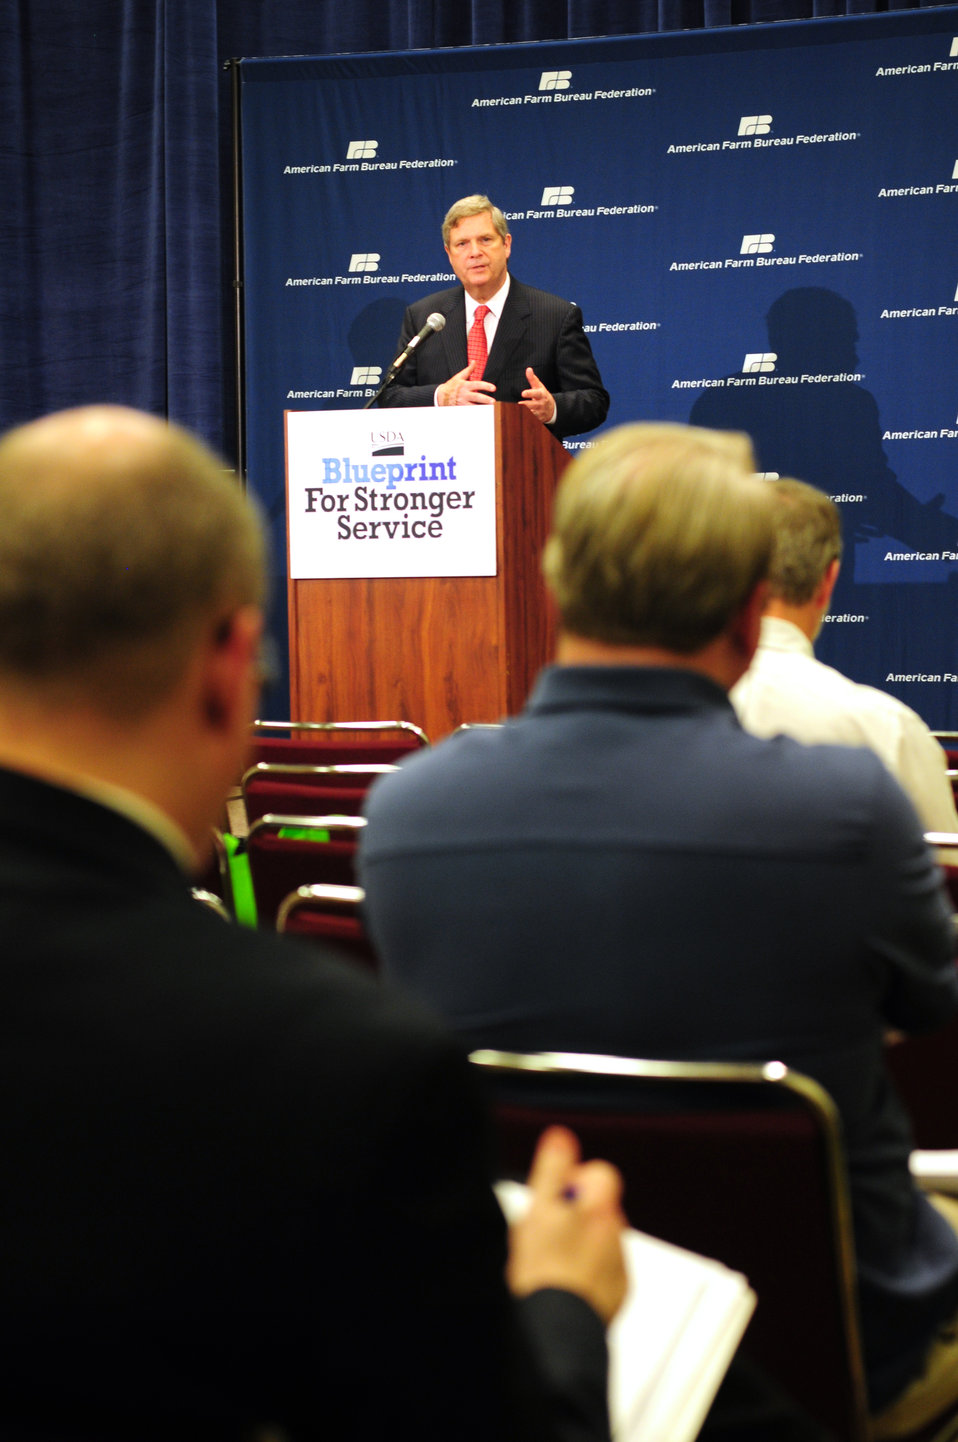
Agriculture Secretary Tom Vilsack presents USDA's Blueprint for Stronger Service, a plan to Increase Efficiency in USDA Operations, on Monday, January 9, 2012 in Honolulu, Hawaii.